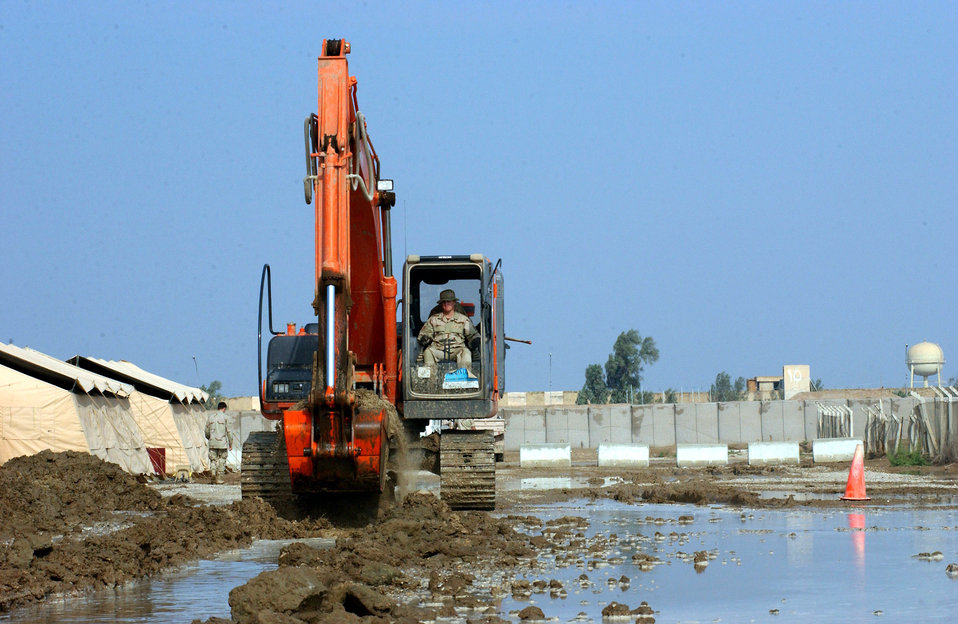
Diggin' out

TALLIL AIR BASE, Iraq -- Staff Sgt. Daniel Craig digs a deep trench Dec. 3 to remove excess water throughout tent city after two days of heavy rains. He is assigned to the 332nd Expeditionary Civil Engineer Squadron.